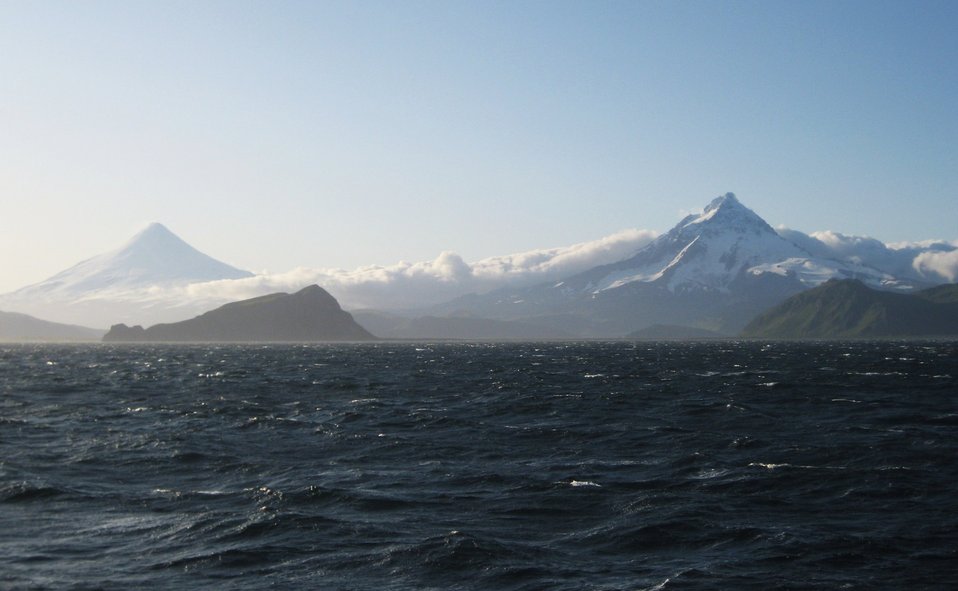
Shishaldin (left) and Isanotski volcanoes on Unimak Island.